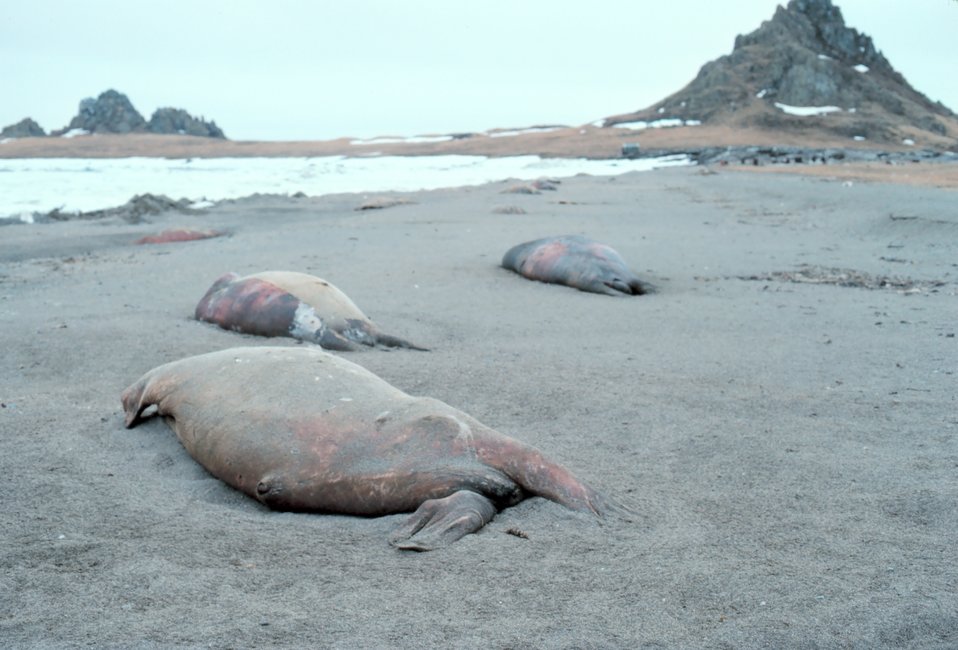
Currents carry many dead things to Punuk Island making it the graveyard of the Bering Sea.